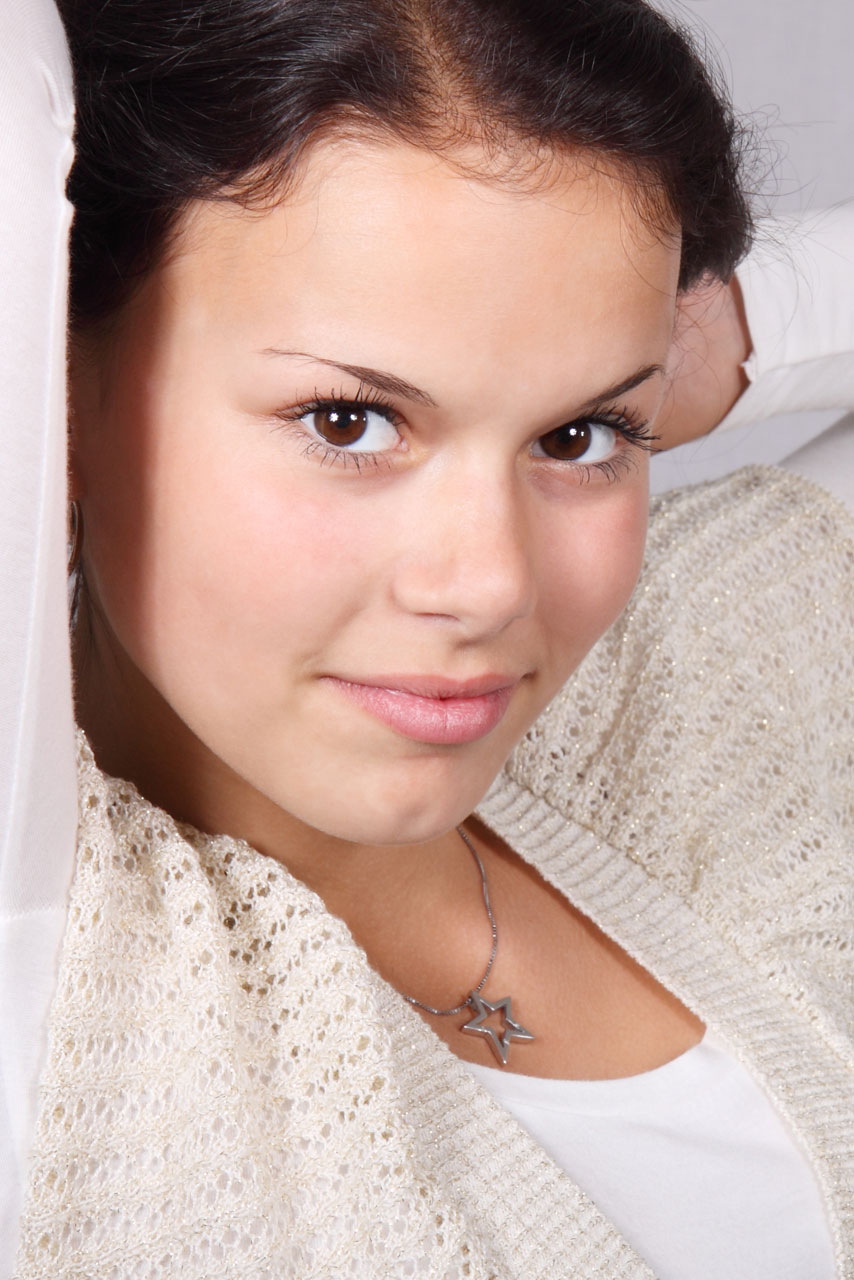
Sensuality

Young woman in sensual pose.